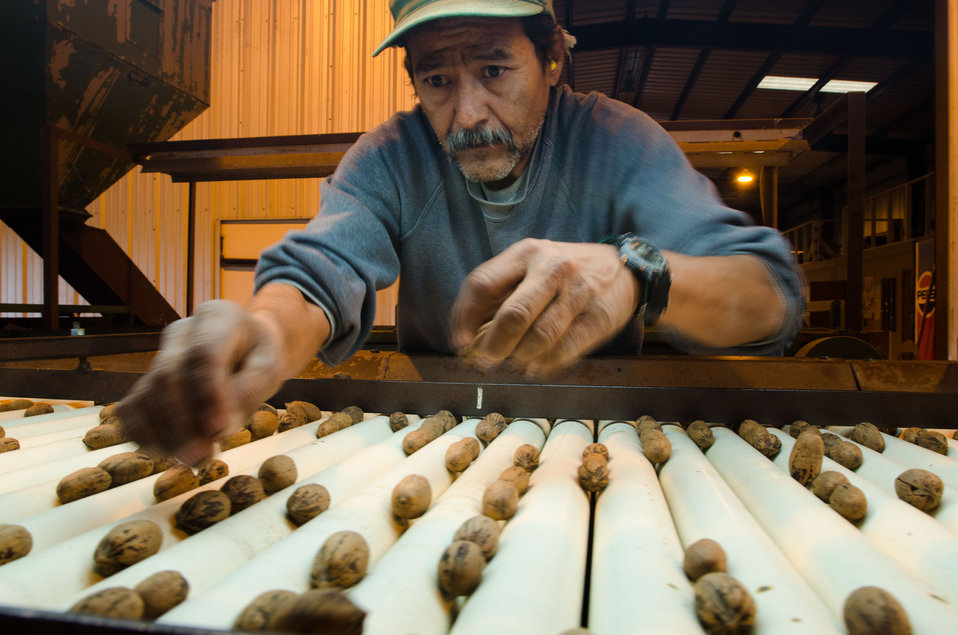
Jesus Gomez uses keen eyes and fast hands to sort out any pecans that are less than perfect from the last load of this season's harvest at Arrowhead Farms of Crystal City, TX, on Friday, December 9, 2011, owned by Mr. Akram Mohammad, a pecan farmer since 2005. The 719 acre farm with 10,000 trees, features some orchards with underground micro irrigation system that feeds water to the roots of 4,380 pecan trees on 146 acres. Mr. Mohammad said, “USDA (U.S. Department of Agriculture) was essential to my business and trees surviving the recent exceptional drought. The trees were stress free thanks to underground micro-irrigation. This is essential to the future growth of Texas agriculture and good for America.” U.S. Department of Agriculture’s (USDA) Environmental Quality Initiative Program (EQIP) awarded Mr. Mohammad a $130,000 grant in 2008. He provided $26,000 for the balance of the $156,000 total cost to install a 146-acre underground micro-irrigation for 4,380 trees.